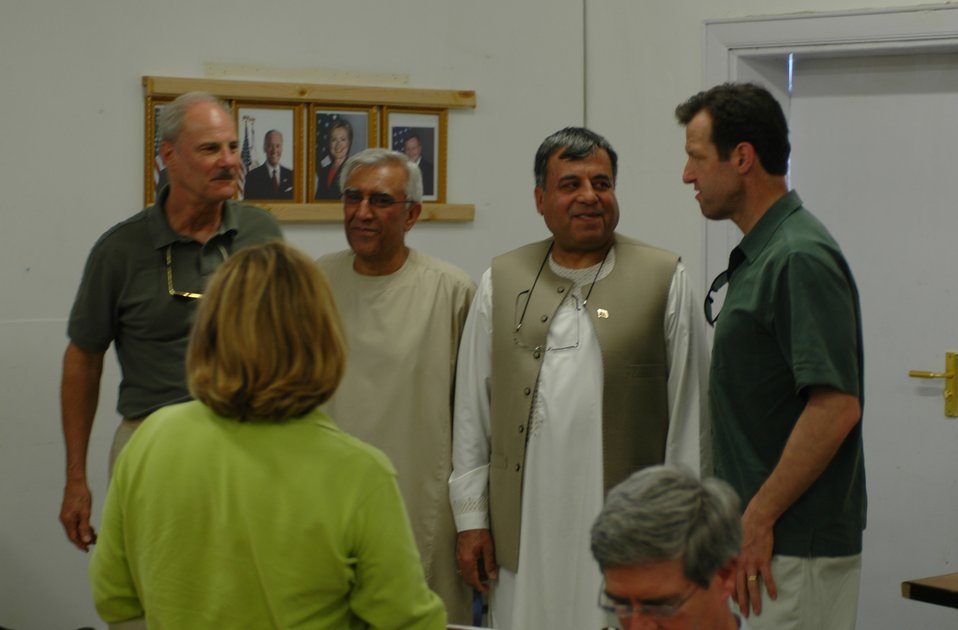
CODEL Berman